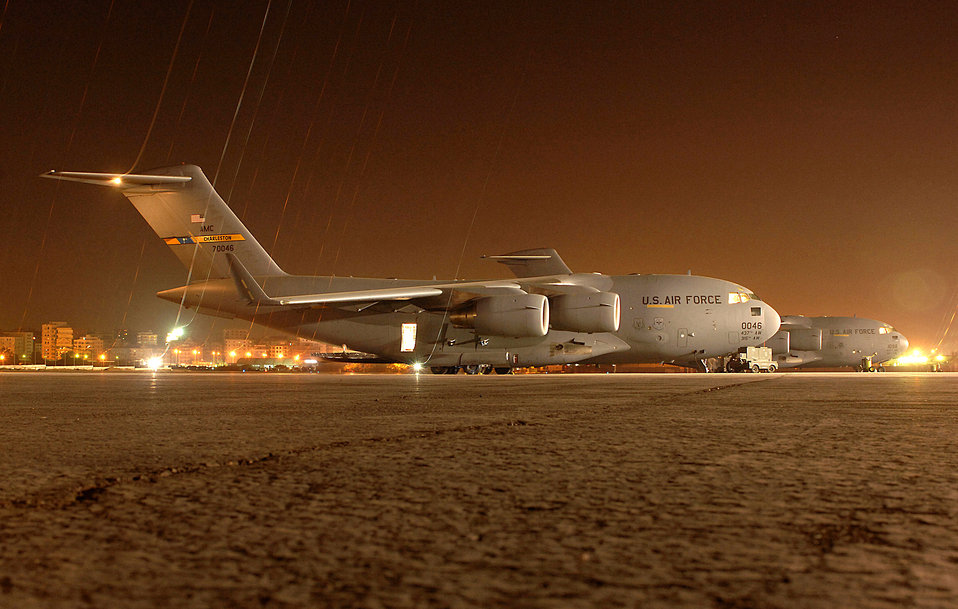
Exercise Bright Star 2007

A C-17 Gloemeater III awaits authorization for take off in preparation to drop paratroopers into Cairo, Egypt, Nov. 10 as part of Exercise Bright Star 2007. The C-17 is from Charleston Air Force Base, S.C.